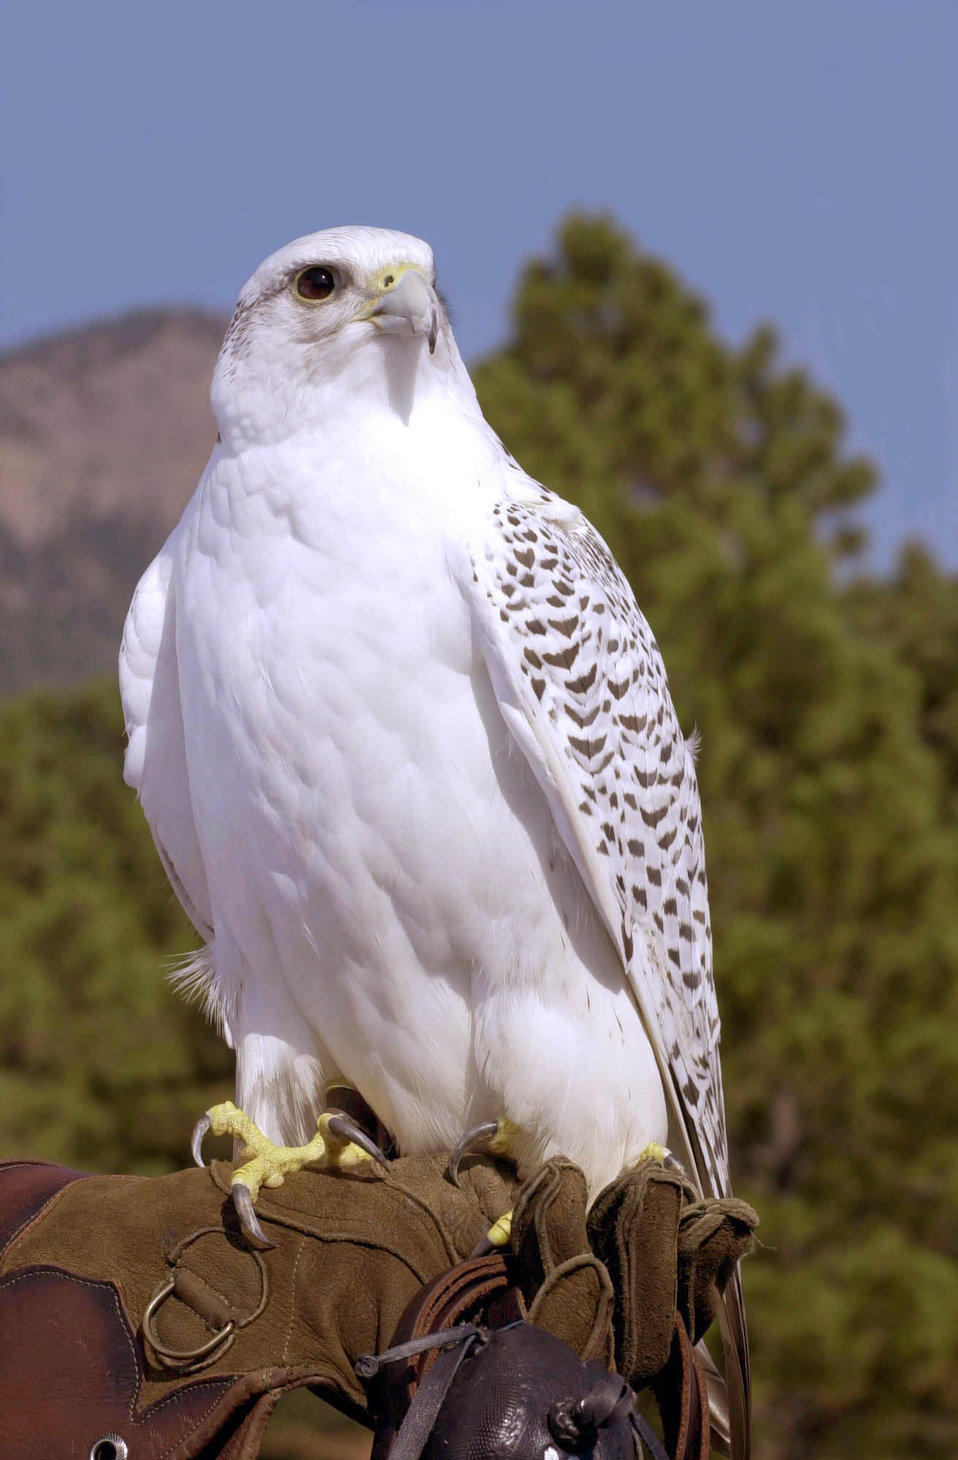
Aurora

U.S. AIR FORCE ACADEMY, Colo. -- Academy mascot Aurora and 10 other falcons here were vaccinated against the West Nile virus after seven magpies were found dead on campus. The birds in the falconry program are staying indoors and being closely monitored to protect them against infection.